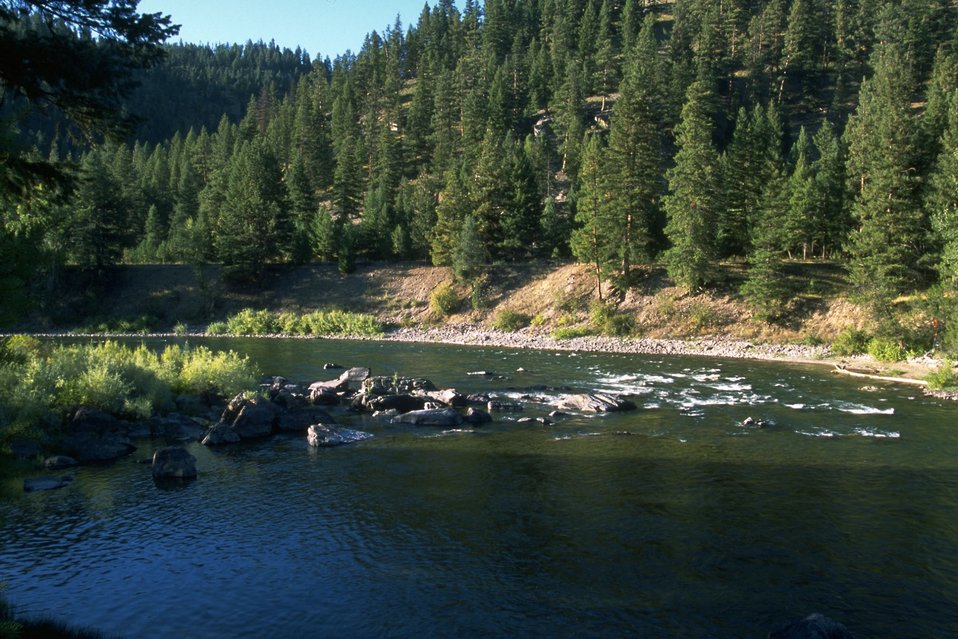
Blackfoot River